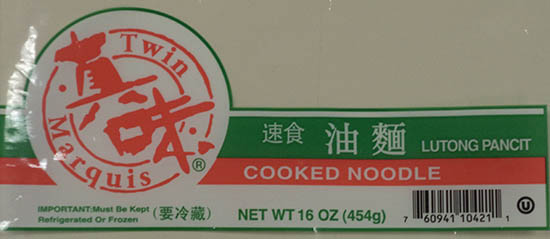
RECALLED – Cooked Noodle and Lo Mein Noodle

March 03, 2014 – Product Recall – Twin Marquis, Inc Issues Allergy Alert on Undeclared Milk in Specific Lots of its Cooked Noodle and Lo Mein Noodle.